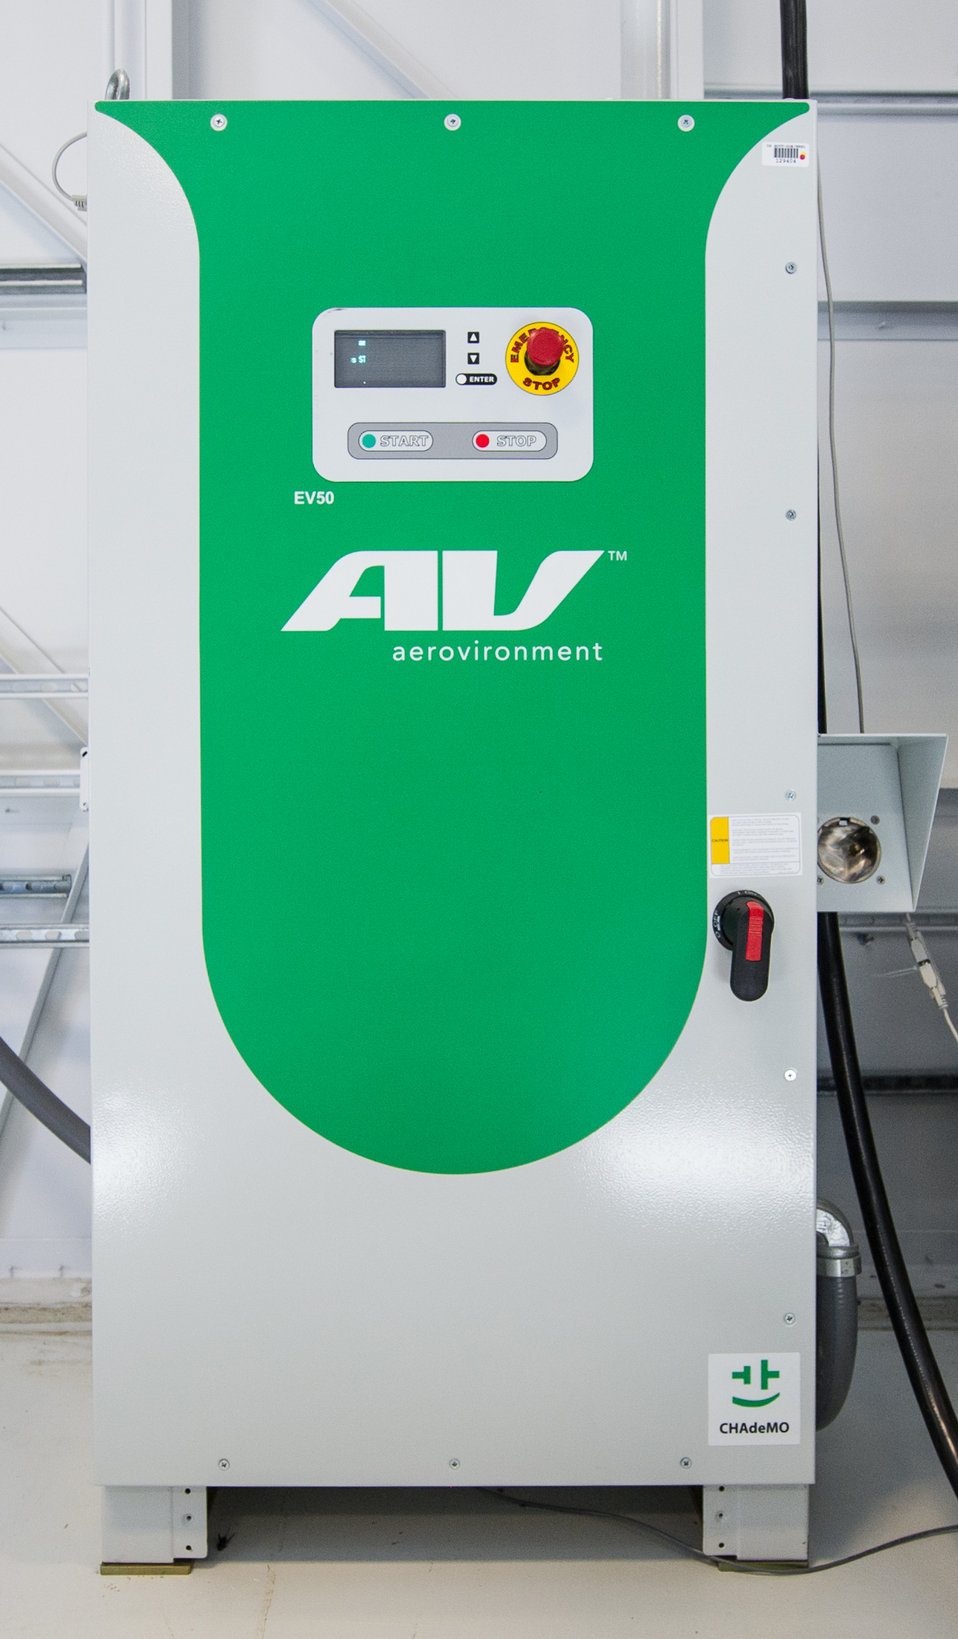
VTIF Research

July 26, 2013 - DC Quick Charger made by Aerovironment used in an experiment at the Vehicle Testing and Integration Facility (VTIF), maximizing solar power generation for the fast charging of an electric vehicle (Gray Nissan Leaf) from a solar PV source. The battery in the Ford Transit (white van) acts as a stationary battery, simulating the utility grid load and providing additional power or storing excess power as needed to charge the EV.